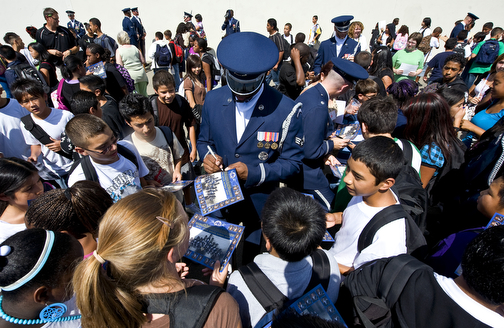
Air Force Week-Sacramento

Airmen from the United States Air Force Honor Guard Drill Team sign autographs and pose for photos after their performance during a visit to Rosa Parks Middle School in Sacramento, Calif., Sept. 10, 2009, for Air Force Week-Sacramento. Air Force Week is an event using various activities and exhibitions to educate the community about the Air Force's capabilities and missions.